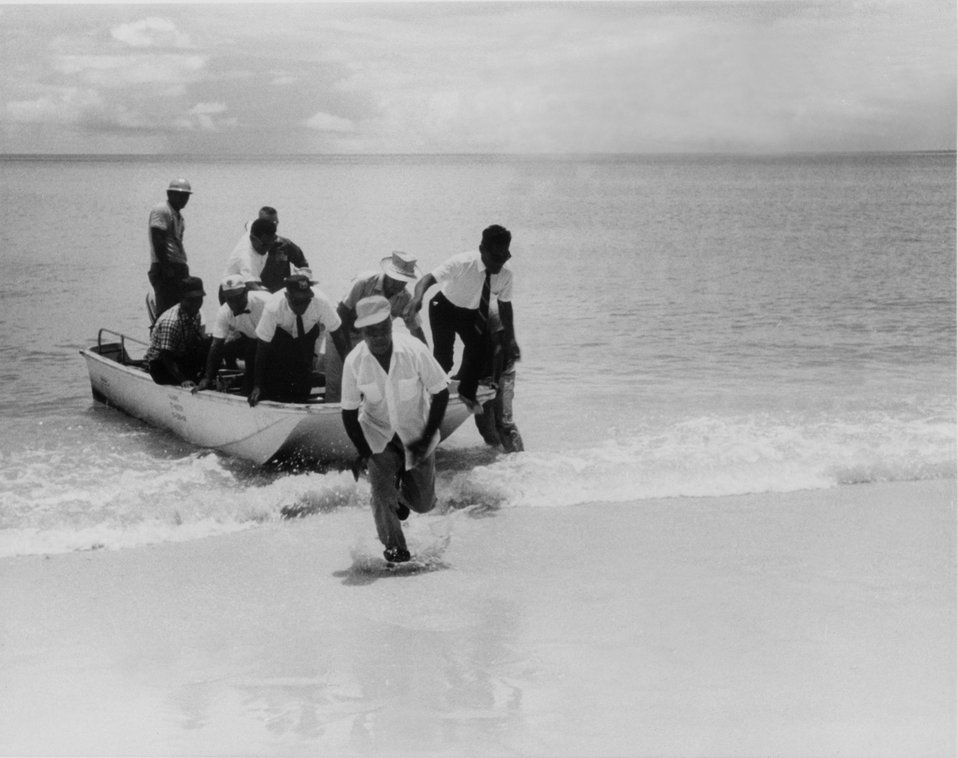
Bikini natives allowed to return to homeland after US allowed them to after testing nuclear weapons on the islands.